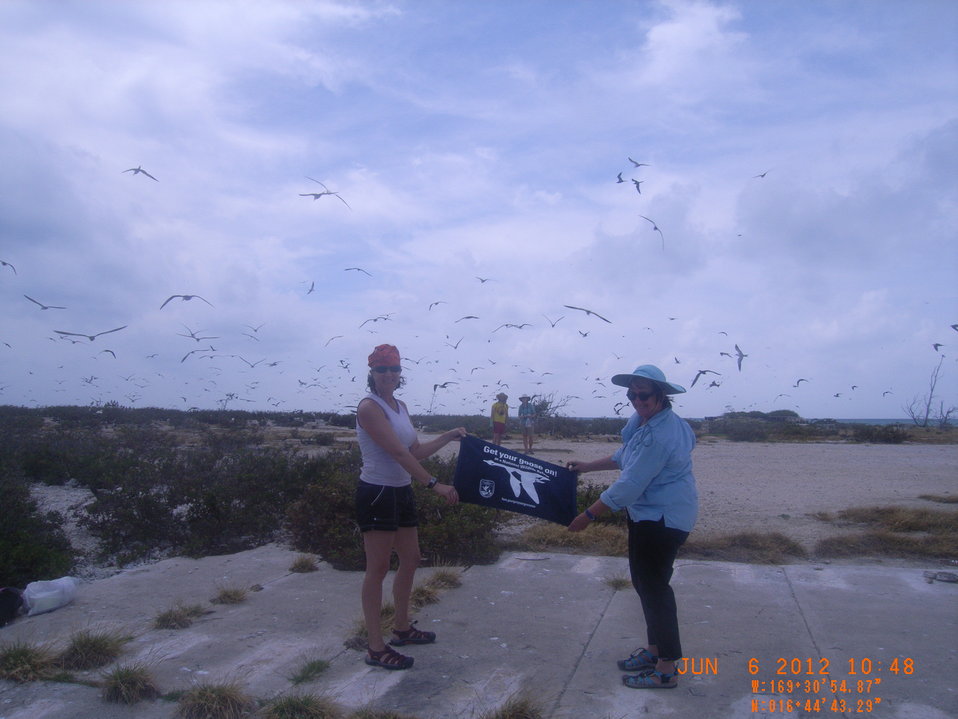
Get Your Goose On! Atoll Style

Kendra Maty, Charlie Parrott, Kelsie Ernsberger, and Lee Ann Woodward about to conduct an ant survey on North Island, Johnston Atoll NWR.